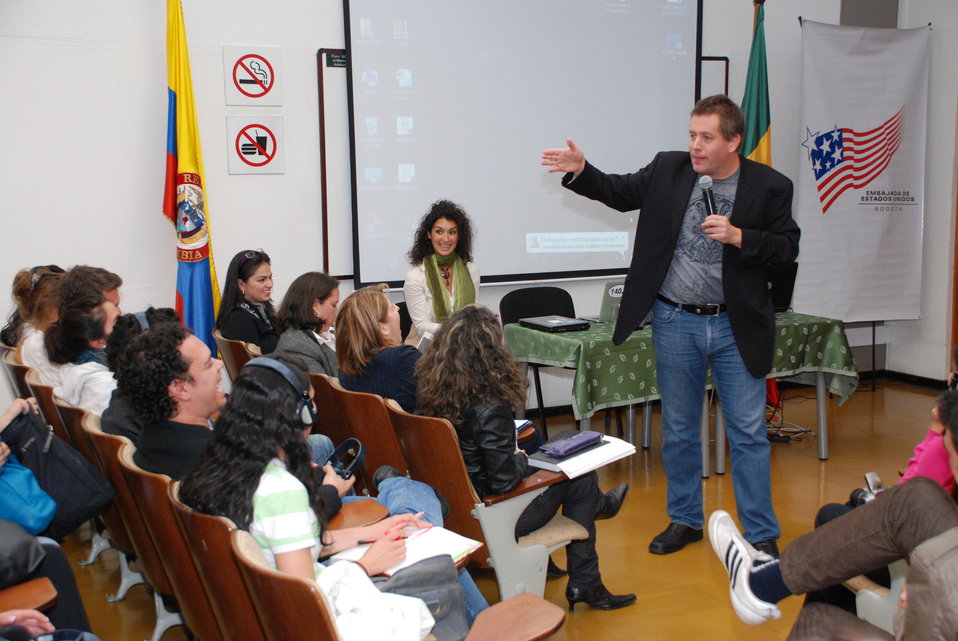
Peter Shankman Participates in Social Media Week in Bogota, Colombia

Peter Shankman, Founder of Help a Reporter Out, discusses his experience incorporating social media into marketing campaigns during Social Media Week (@SMW), hosted by the U.S. Embassy in Bogota, Colombia, at Javeriana University in Bogota, Colombia, on September 20, 2011.